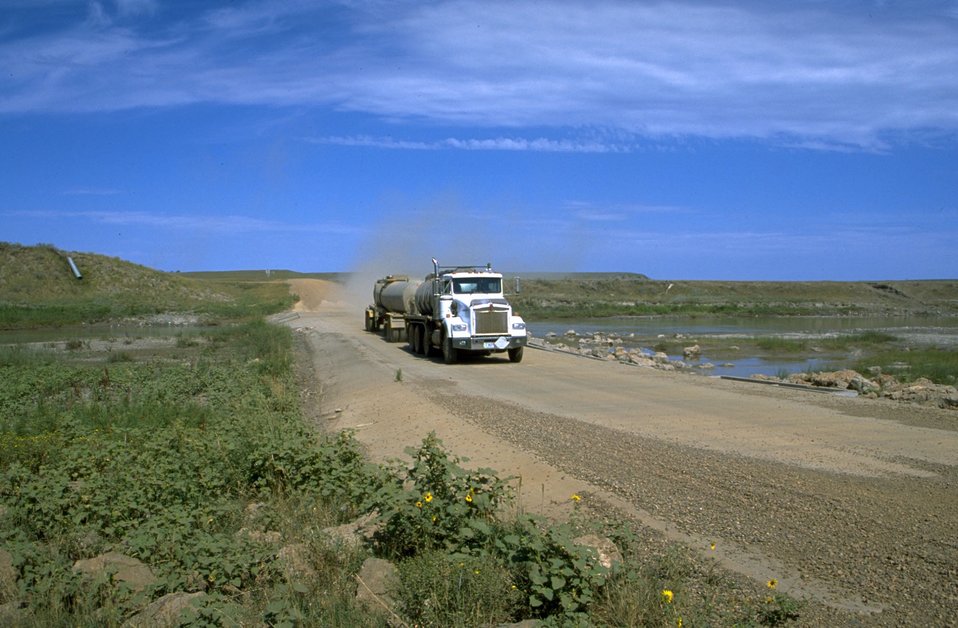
Tanker truck in oil field